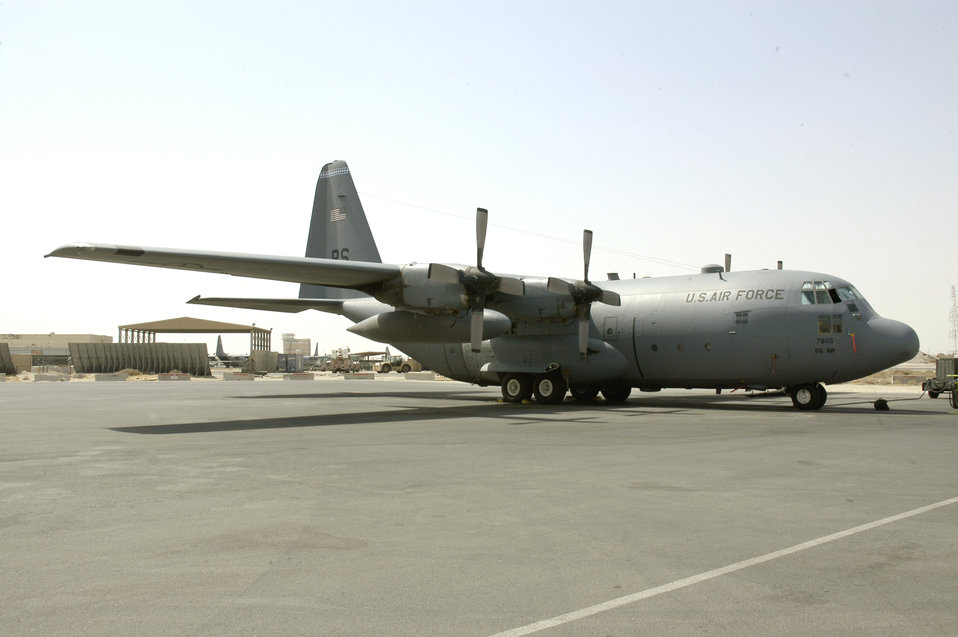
Decorated Vietnam vet back at war

Aircraft 63-7865, a C-130 Hercules deployed from Ramstein Air Base, Germany, sits on the flightline at a forward operating base in Southwest Asia. The aircraft features a plaque telling its story of being a Purple Heart recipient.